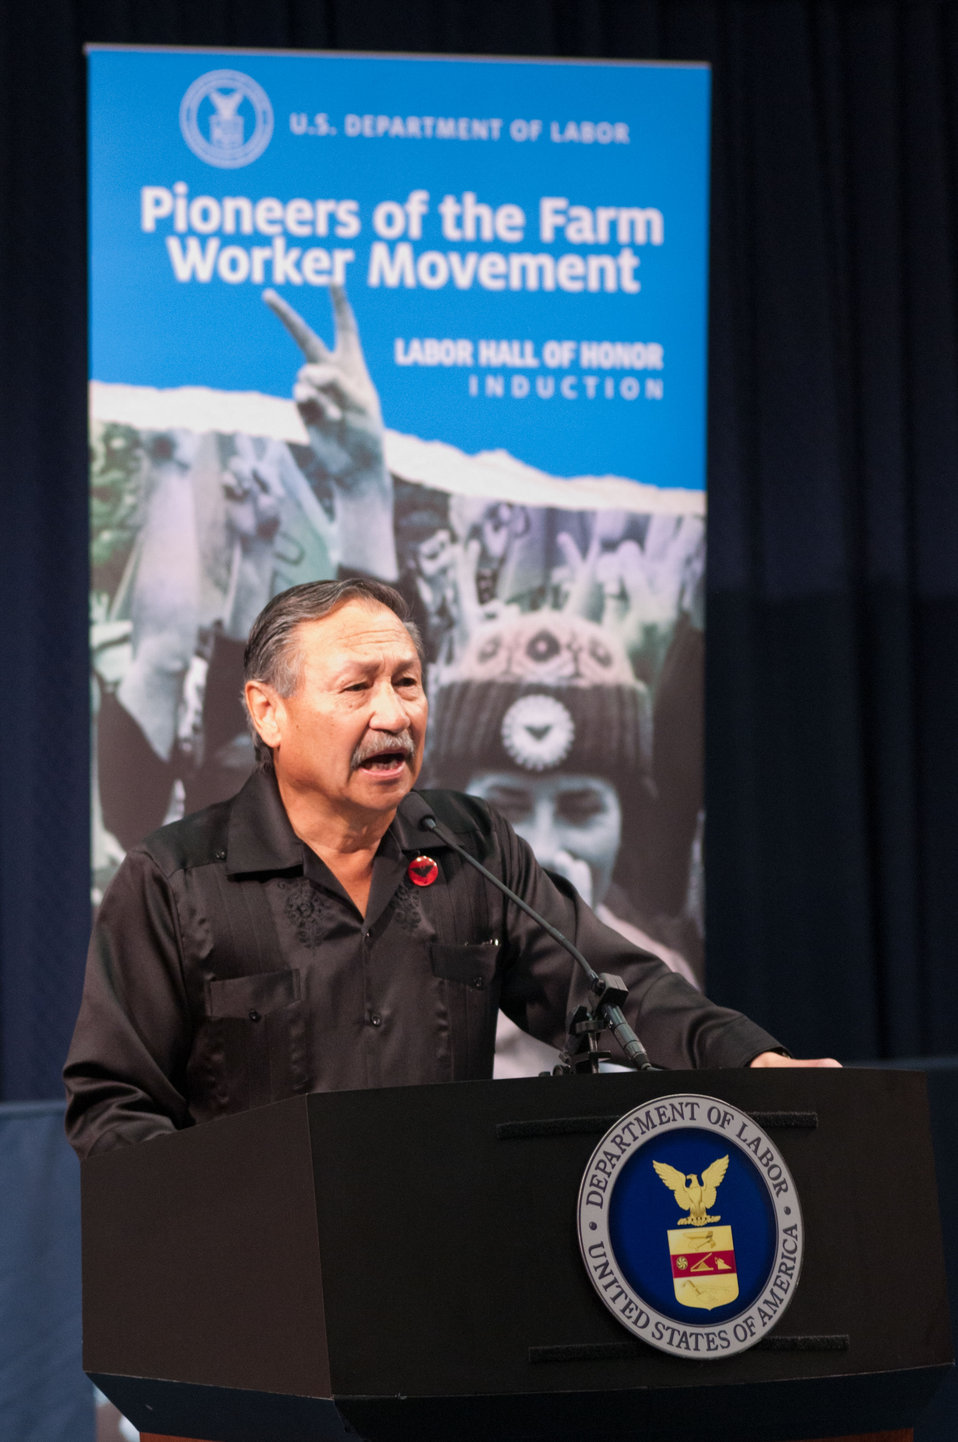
Arturo Rodriguez, President, United Farm Workers of America spoke of the diligence, dedication and effort by Cesar Chavez, a Mexican-American labor leader who used non-violent methods to fight for the rights of migrant farm workers in the southwestern United States during the dedication of the Cesar E. Chavez Memorial Auditorium at the United States Department of Labor in Washington, D.C., Monday, March 26, 2012. Chavez founded the Cesar Chavez Foundation, a group that advocates for the rights of farm workers, acting to increase wages and improve the working conditions and safety of farm workers.